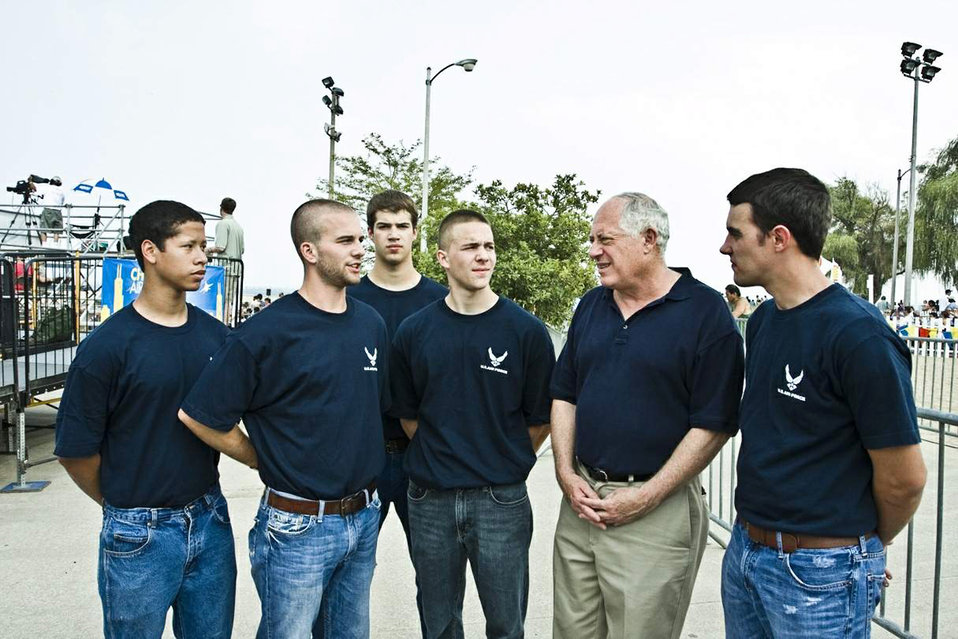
New recruits enlist at Chicago Air and Water Show

Illinois Governor Pat Quinn talks with new Air Force Recruits following the oath of enlistment ceremony Aug. 15. The ceremony, officiated by Maj. Gen. Gregory Feest, commander of Air Education and Training Command's 19th Air Force at Randolph Air Force Base, Texas, was observed by thousands of spectators attending the 51st Chicago Air and Water Show. Meeting with the governor are (from left) Nick Podjasek, from Carol Stream; Patrick Luehrsen, from Libertyville; Clay Turner, from Lombard; Tom Derosa, from Itasca; and Michael Leonard, from Round Lake.